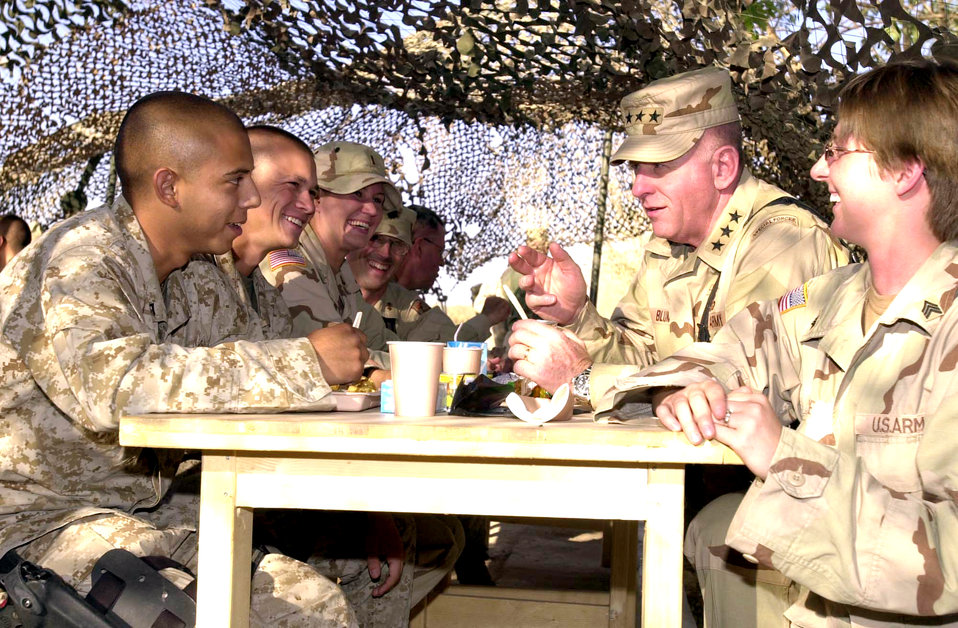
Guard chief vows to minimize personal impact of BRAC

BAGHDAD INTERNATIONAL AIRPORT, Iraq -- Army Lt. Gen. H Steven Blum, chief of the National Guard Bureau, gets acquainted during dinner here with servicemebers supporting Operation Iraqi Freedom.